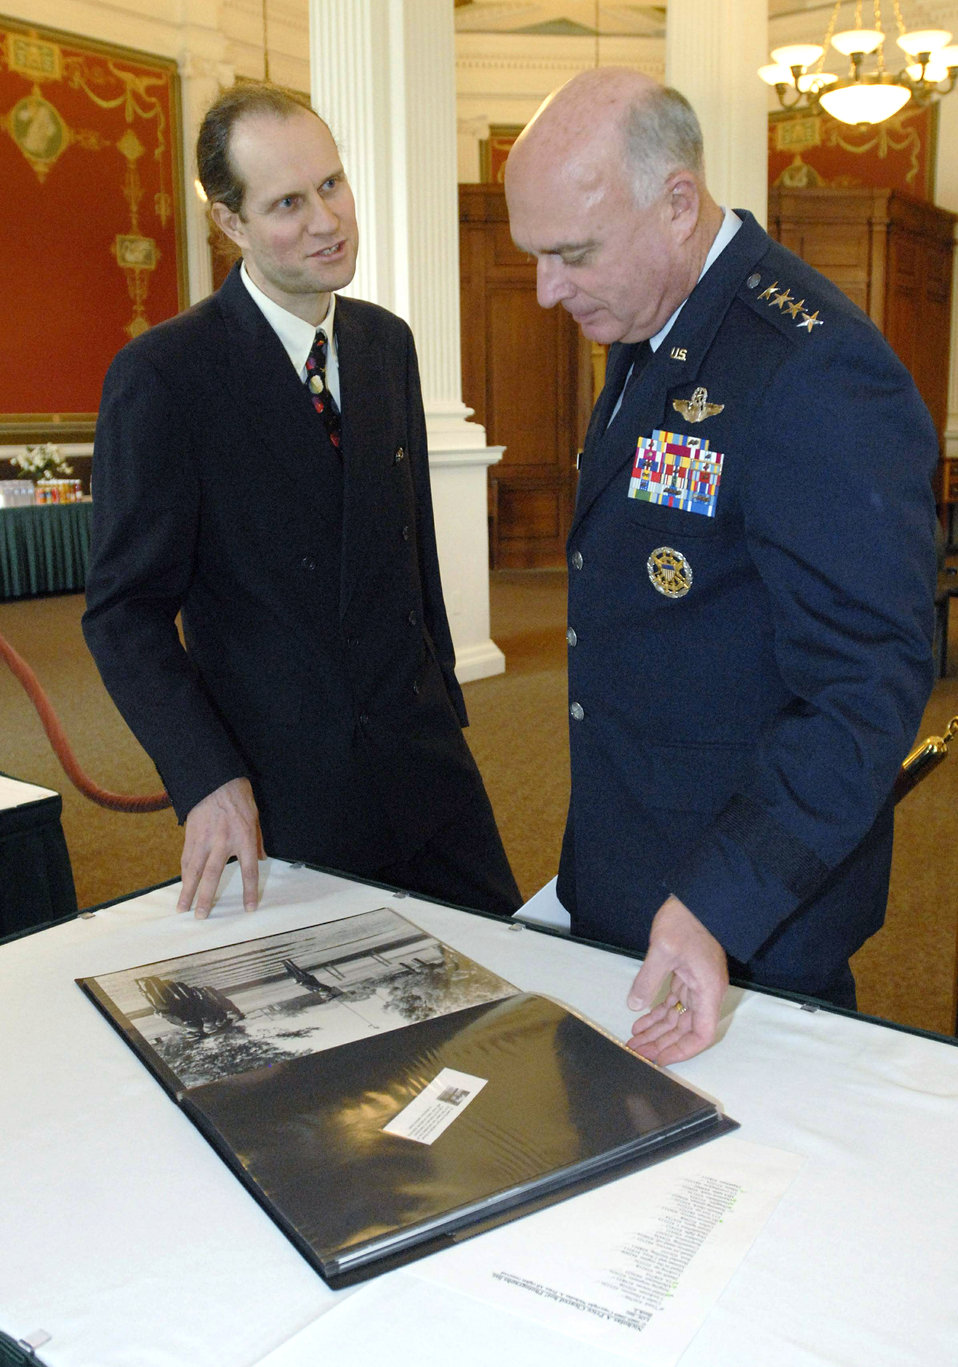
Photographer's pictures of Airmen now in Library of Congress

Gen. Carrol H.